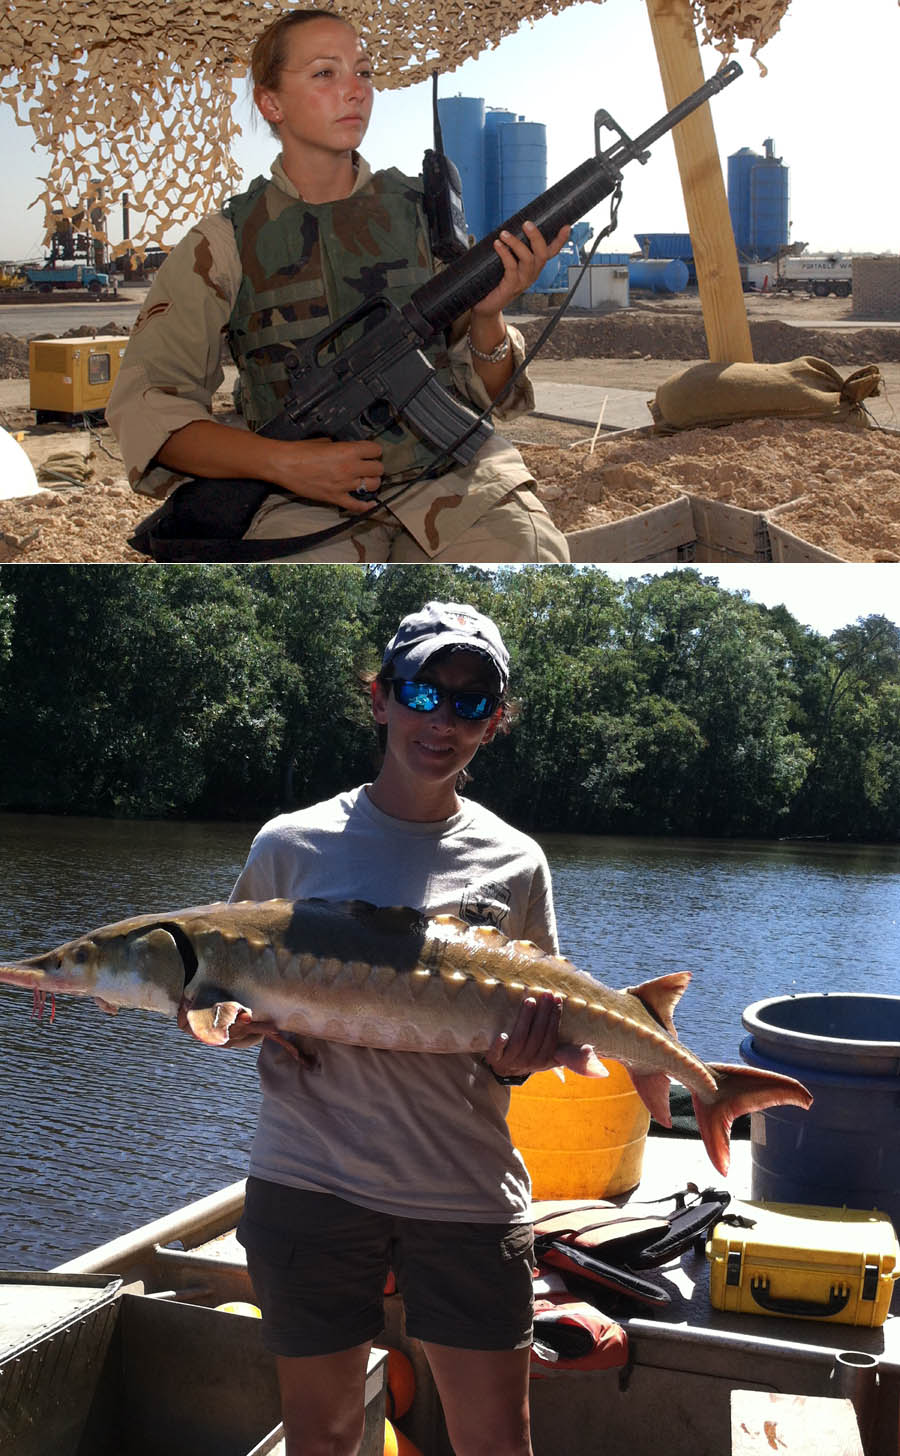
Caroline George

TALLIL AIR BASE, Iraq -- Airman 1st Class Caroline George watches local-national workers at the cement plant here. She is one of about 50 Airmen deployed here to serve as an escort for the 407th Expeditionary Civil Engineer Squadron's force protection flight. (U.S. Air Force photo by Staff Sgt. Craig Clapper) (bottom).
Biological Science Technician Caroline George holding a Gulf sturgeon in her work with the Panama City Fish and Wildlife Conservation Office..
Caroline George.
Staff Sgt. Caroline George served in the United States Air Force for six years. During that time she was stationed in Iceland, Okinawa and Idaho. She was an Aerospace Command & Control Systems Craftsman. During her time in the service, she voluntarily deployed in 2004 in support of Operation Iraqi Freedom to Tallil Air Base serving as a force protection escort. .
Currently Caroline is a Biological Science Technician for Fisheries in the PCFO.